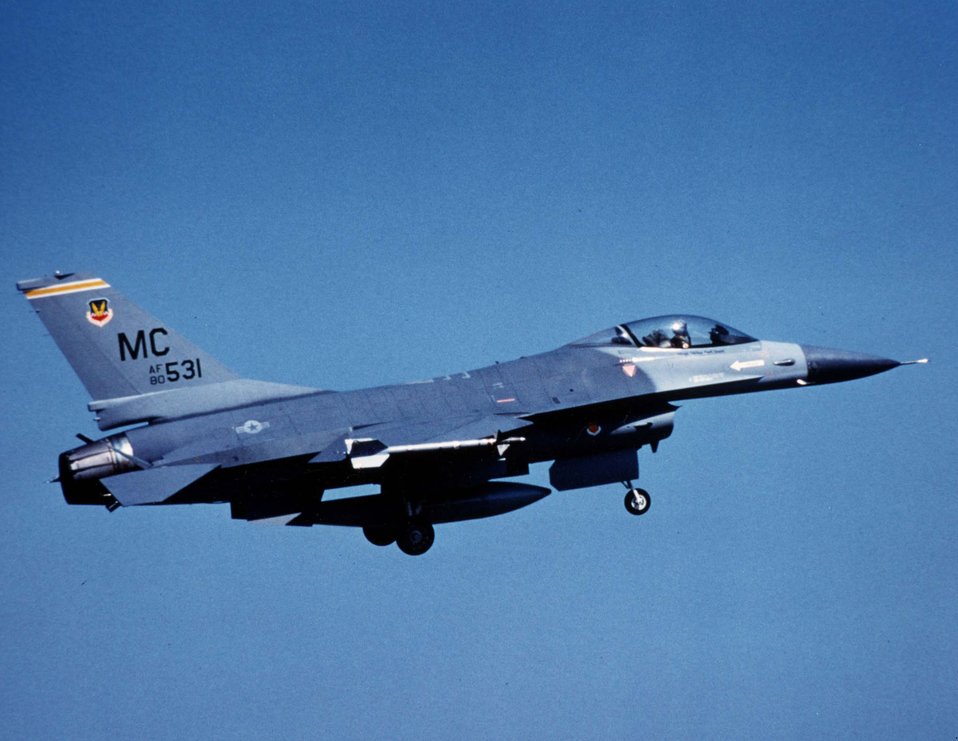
F-16A Fighting Falcon

An F-16A Fighting Falcon lands at MacDill Air Force Base, Fla., during the 1980s.